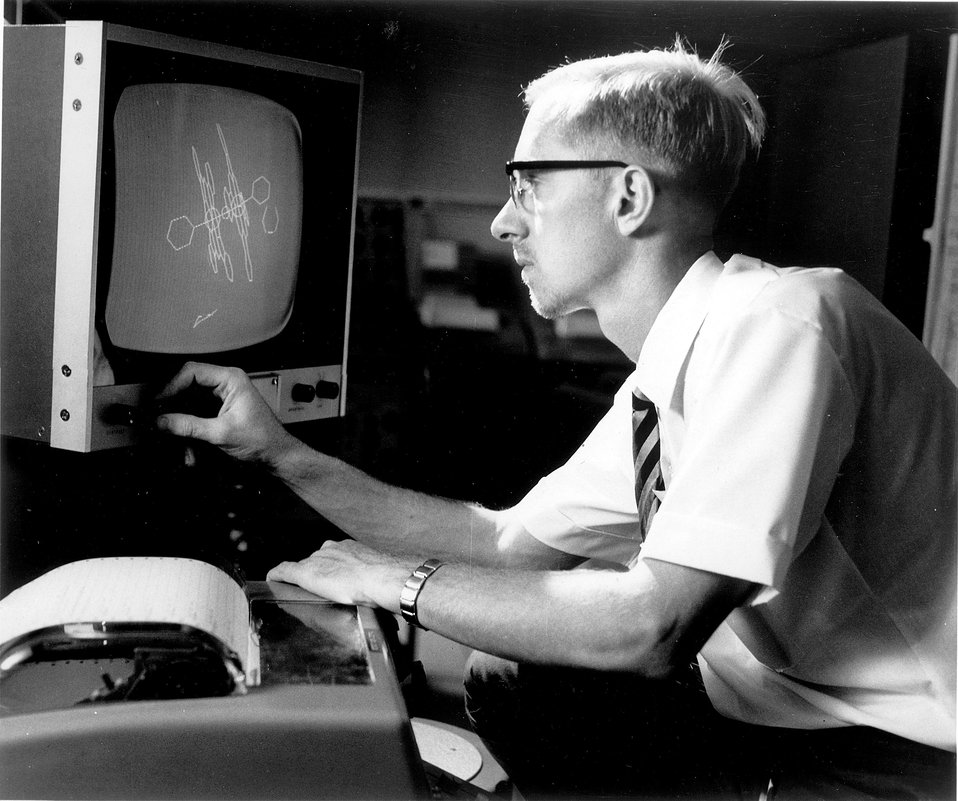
A novel and powerful technique for use in the solution of complex crystal
structures is the computer generated display of molecular structures in three
dimensions on a color television screen.